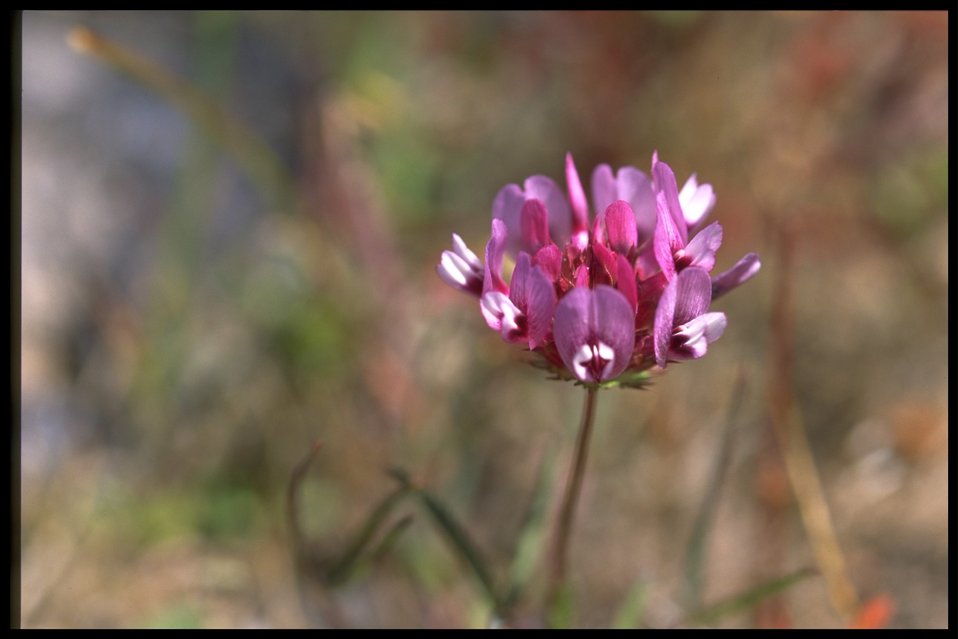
Closeup shot of Trifolium depauperatum.